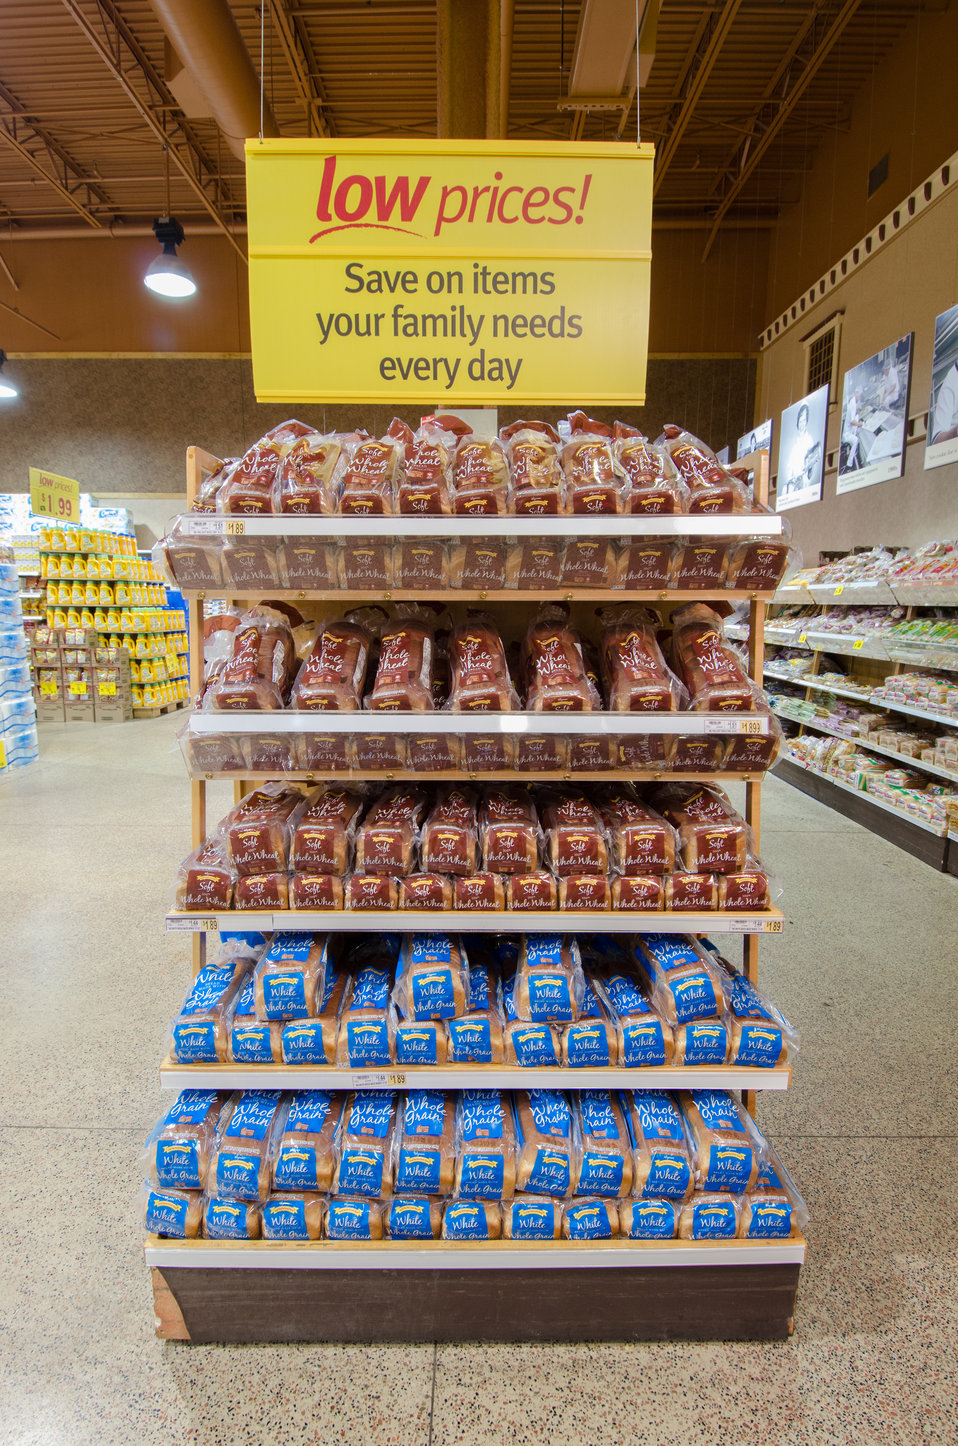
Packaged breads at a grocery store in Fairfax, Virginia, on March 3, 2011.